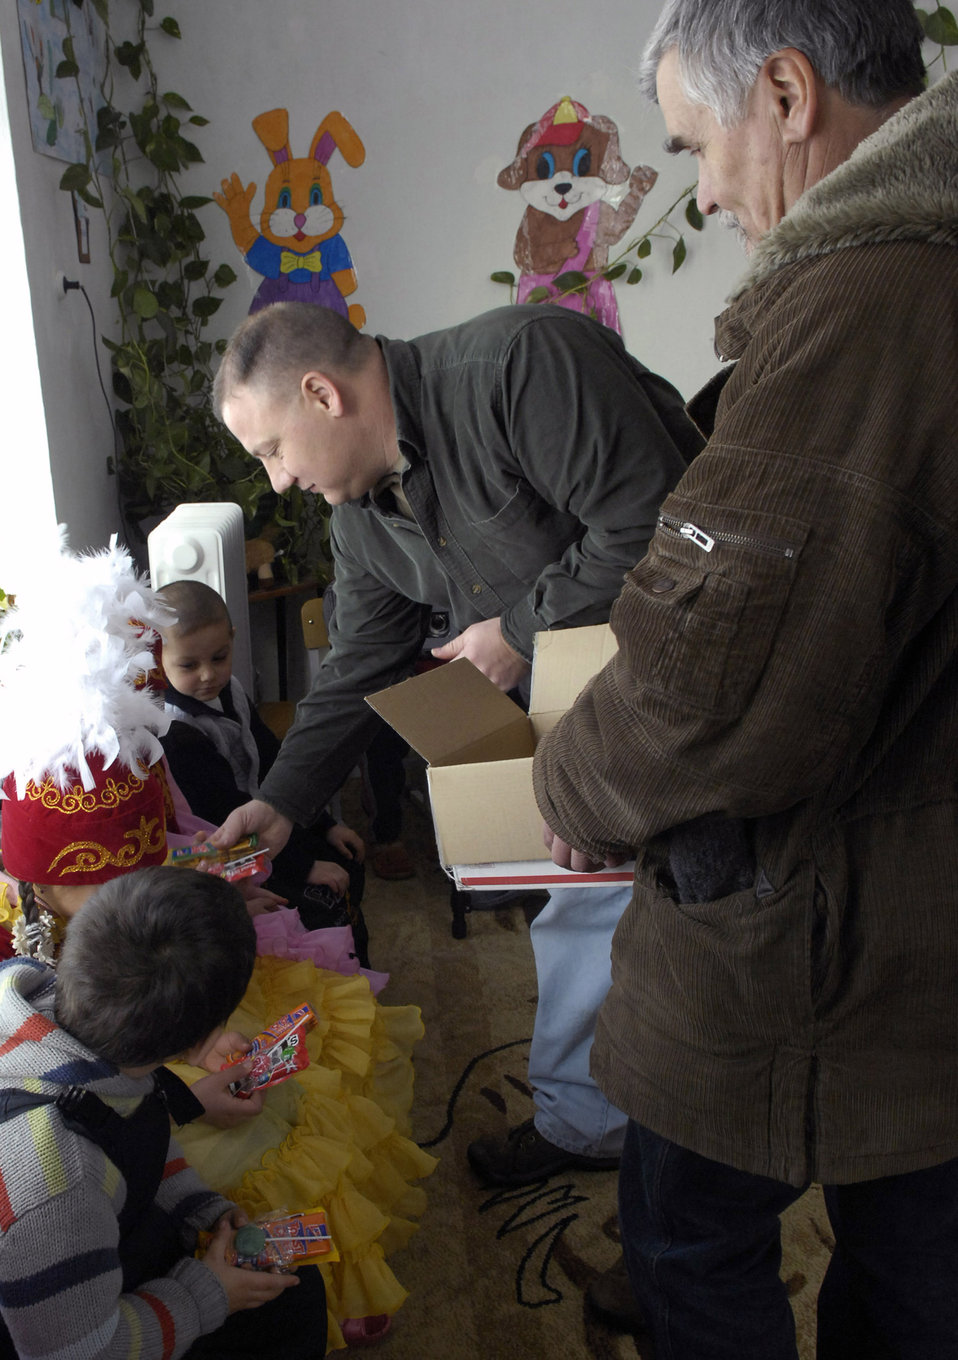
School dance

Senior Master Sgt. Reynold Albright, passes out some treats for the kids with the help of an interpreter Jan. 24 at a preschool in Vasilievka, Kyrgyzstan. Sergeant Albright is the 376th Expeditionary Operations Group superintendent and volunteers from Manas Air Base, Kyrgyzstan, installed and insulated windows in the main part of the school. Members of the 376th EOG have sponsored the nearby villages of Vinogradnoye and Vasilievka for about two years, with each air and space expeditionary force rotation spending volunteer time working for the village mayor, like making improvements at this kindergarten in Vasilievka.